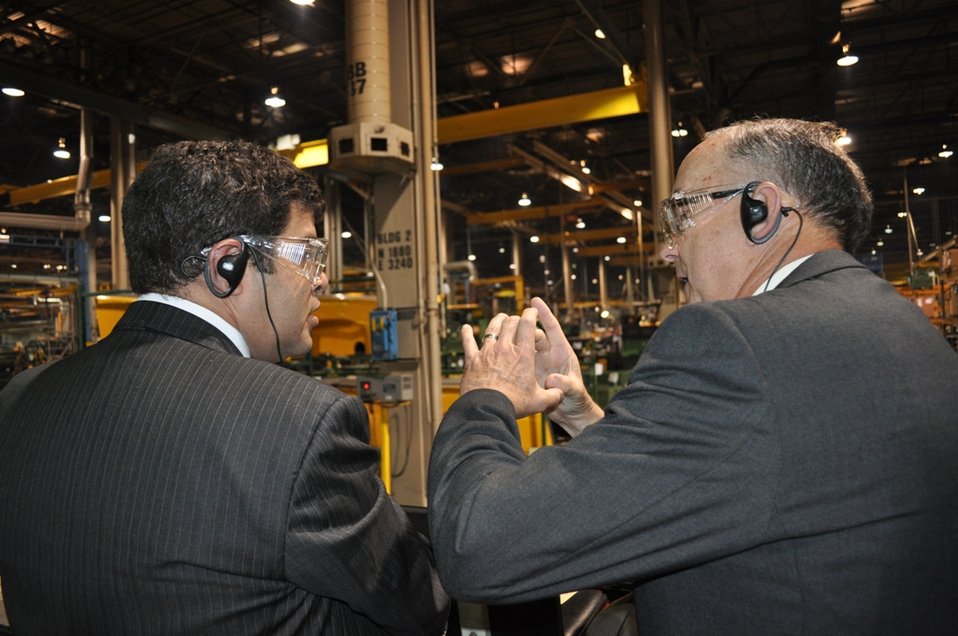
Deputy Secretary Neal Wolin visits Deere and Co.

Deputy Secretary Neal Wolin and Chairman and CEO of Deere and Co. Sam Allen touring the John Deere Davenport Works Construction and Forestry Facility in Moline, IL. While in Moline, Deputy Secretary Wolin met with members of the Council on Competitiveness’s U.S. Manufacturing Competitiveness Initiative and participated in a discussion on the Council’s vision for 21st Century American manufacturing, the state of the economy, job creation, infrastructure development, and the competitiveness of U.S. businesses.